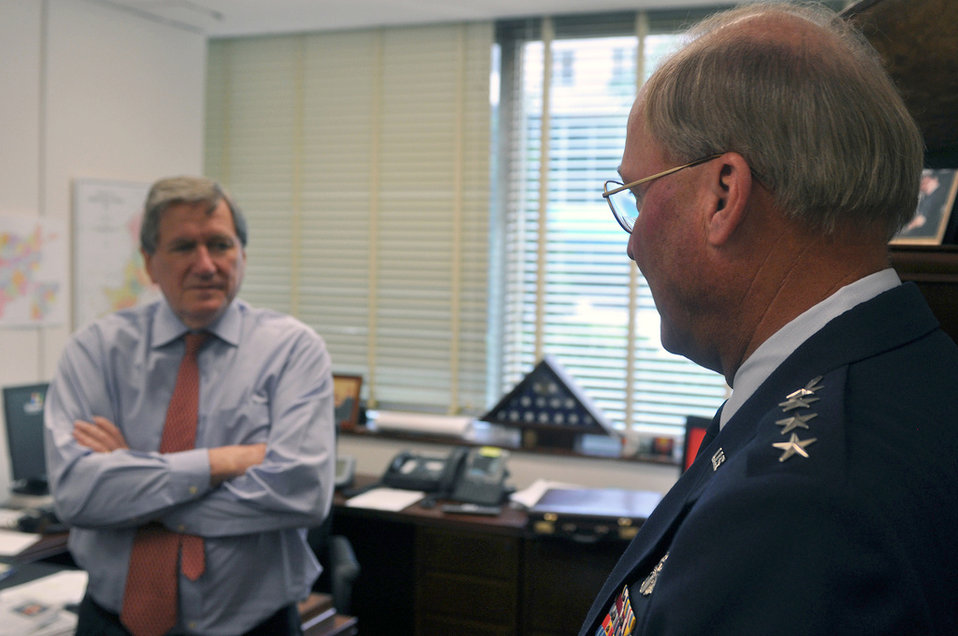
General McKinley visits the State Department

Gen. Craig McKinley (right), chief of the National Guard Bureau, meets with Richard Holbrooke, special representative for Afghanistan and Pakistan, Sept. 14, 2009 during a visit to the State Department. The two discussed National Guard Agribusiness Development Teams at work in Aghanistan and National Guard training of civilian advisors for Afghanistan at the Indiana National Guard's Muscatatuck Urban Training Center.